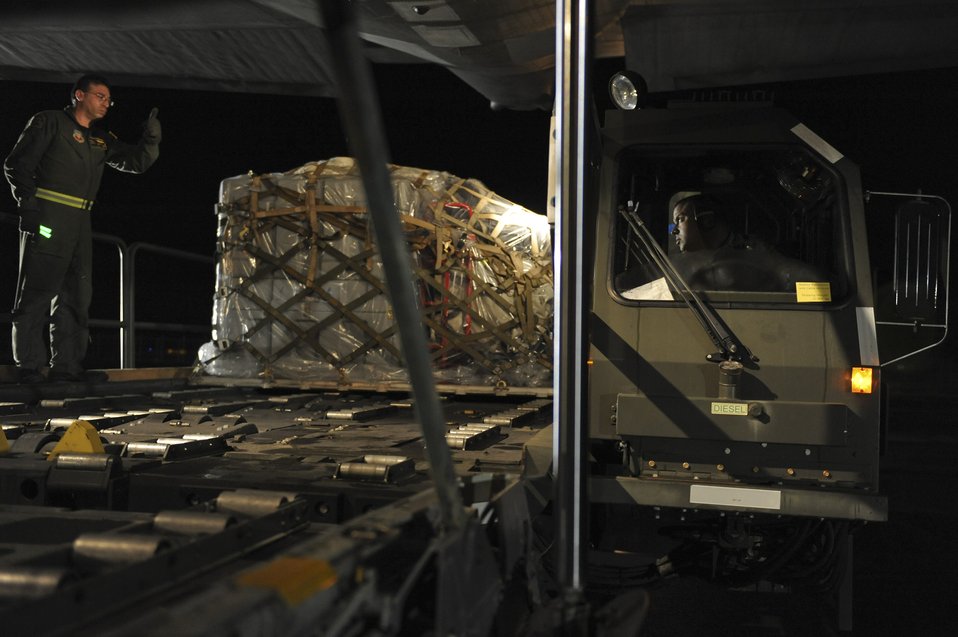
haiti night mission

Airmen from the Puerto Rico Air National Guard's 156th Airlift Wing load cargo onto a C-130E Hercules aircraft Jan. 16, 2010, to support the relief effort in Haiti in the aftermath of a devastating earthquake.